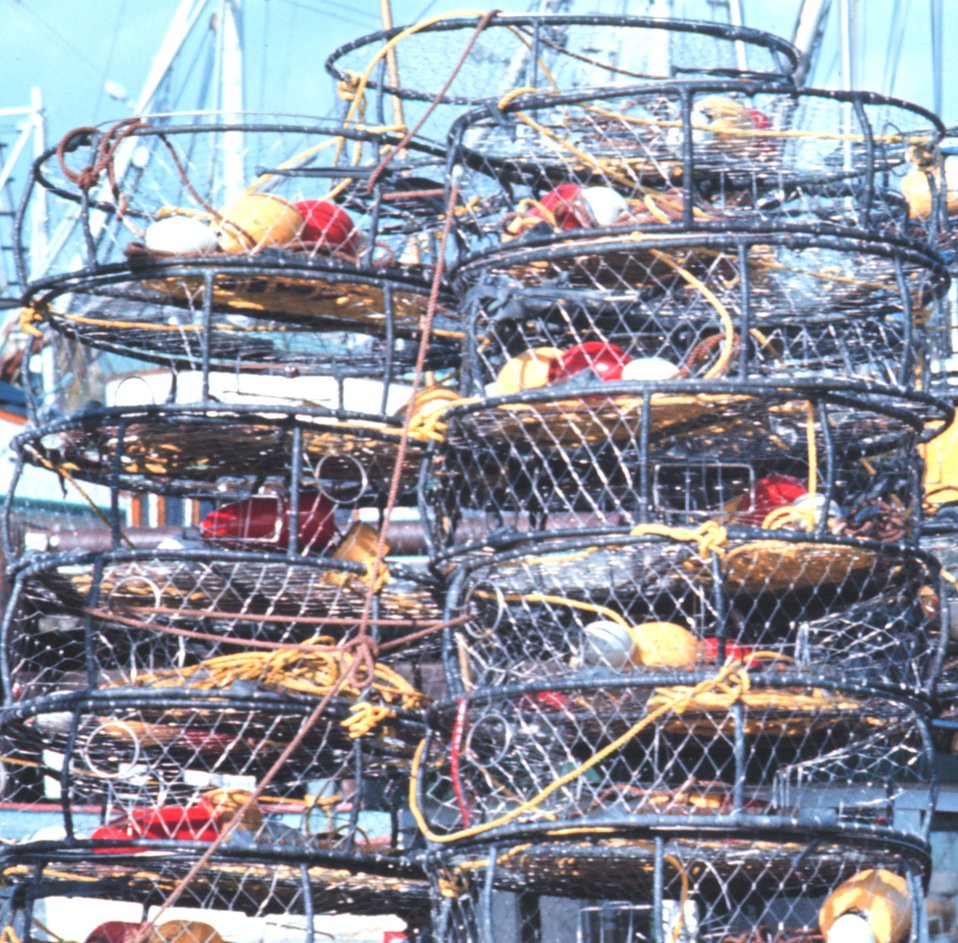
Crab traps on the dock.